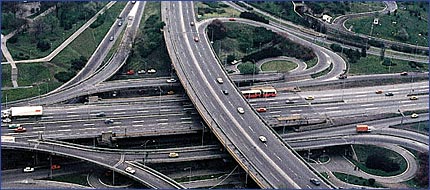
The Mostar Interchange (eastern half)